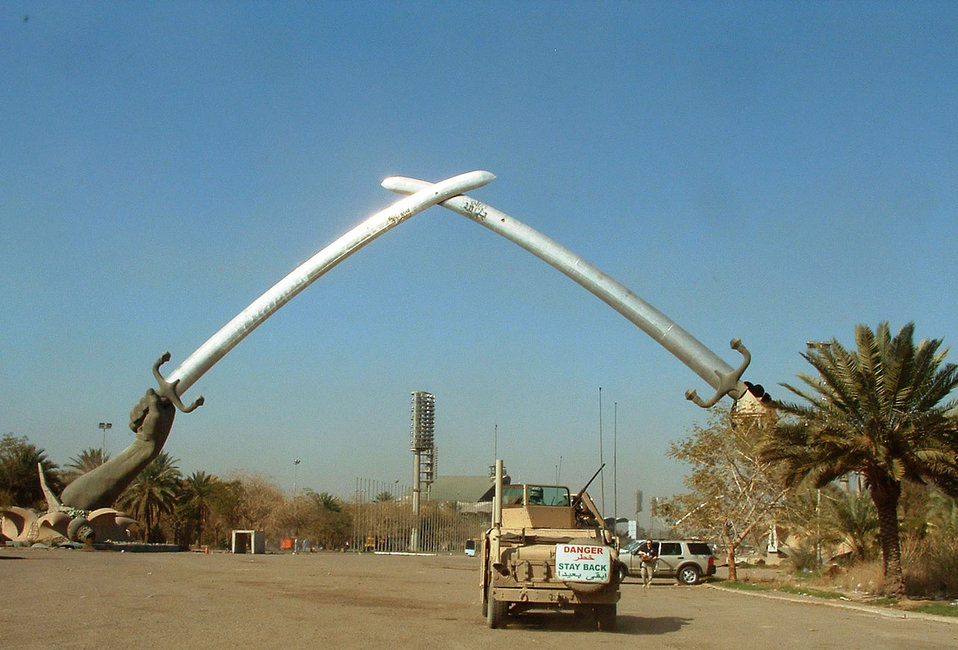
Crossed swords

Saddam's crossed swords, we drove under them when entering the safe zone..